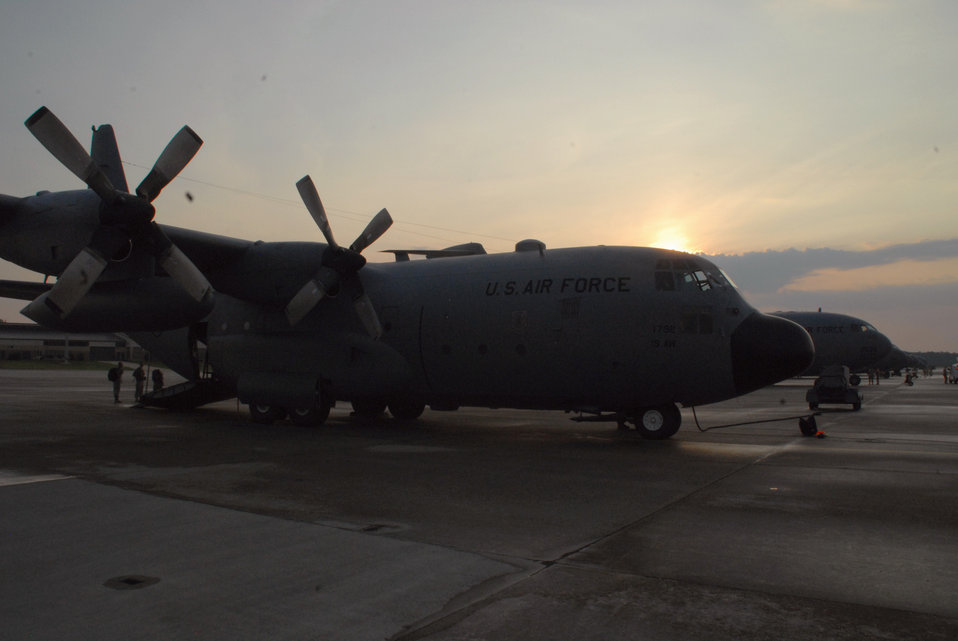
Four Little Rock aircrews take part in largest joint exercise formation

A C-130E Hercules from the 53rd Airlift Squadron, Little Rock Air Force Base, Ark., sits in a long row of C-130s and C-17 Globemaster IIIs June 22, 2010 before a joint forcible entry exercise at Pope AFB, N.C. Four crews from Little Rock AFB joined 14 others from various Air Force Bases to form the largest formation ever assembled for a JFEE June 22, 2010 through June, 2010 at Pope AFB and Fort Bragg, N.C.